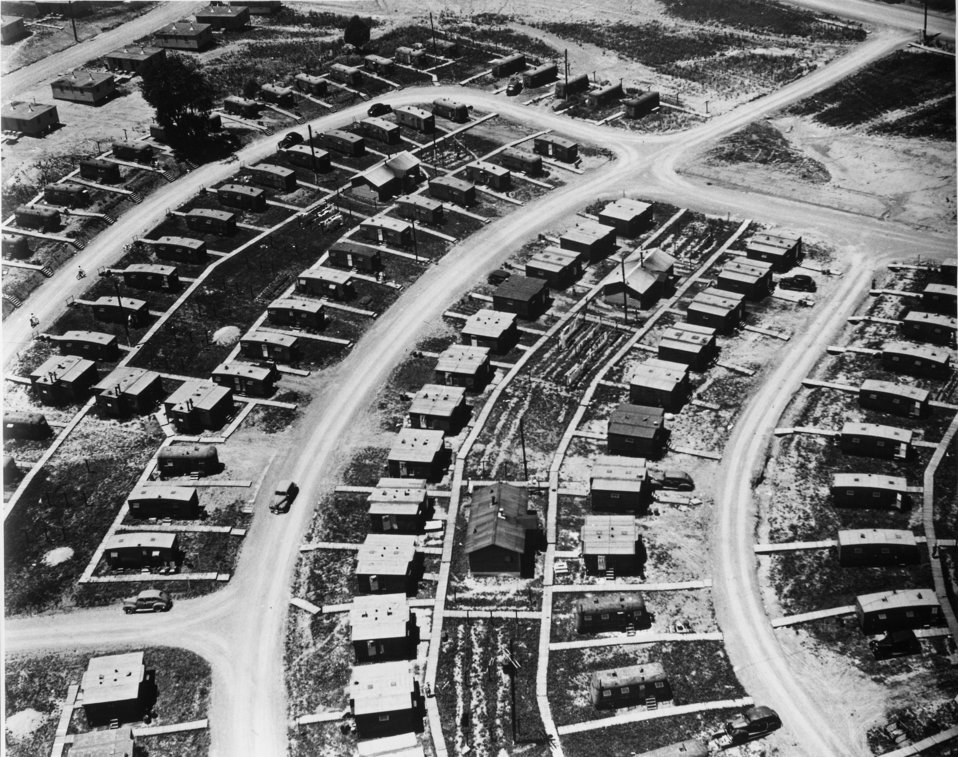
Aerial of Oak Ridge